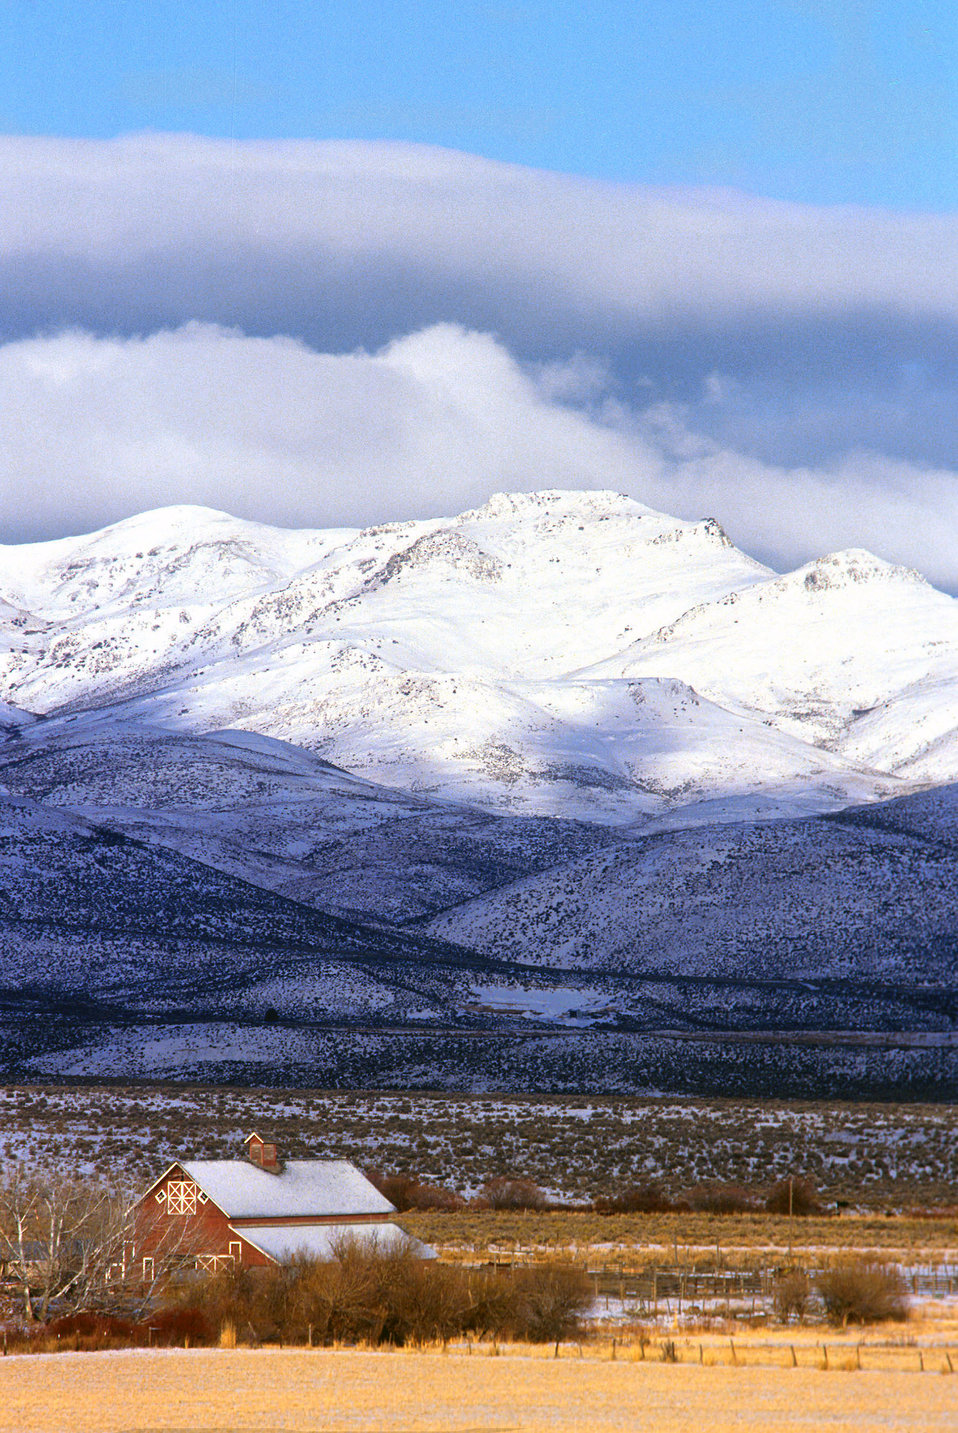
This is the site of the 90-square-mile Reynolds Creek Experimental Watershed in the Owyhee Mountains about 50 miles southwest of Boise, ID.